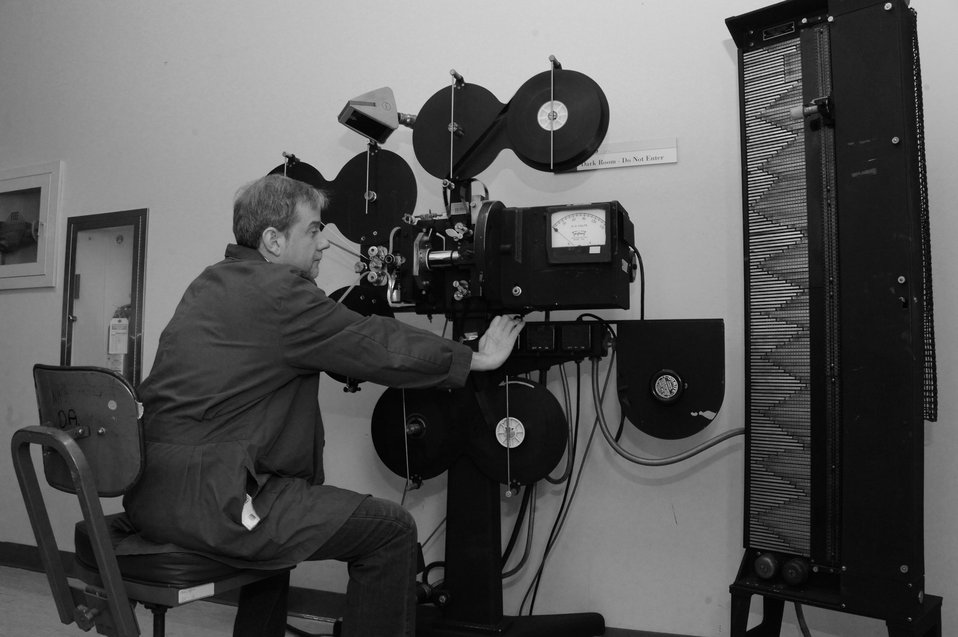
One of a series of recreations of photos of the Depue printer from 1952.; Location: Archives 2 - Motion Picture Preservation Lab, College Park, MD